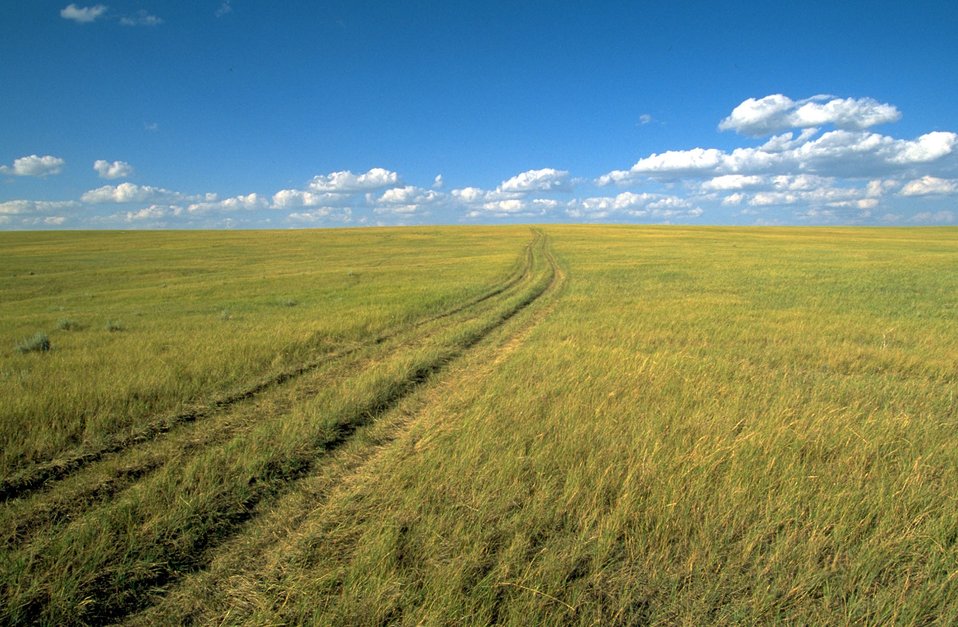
Off-Highway-Vehicle (OHV) Trail across the grasslands